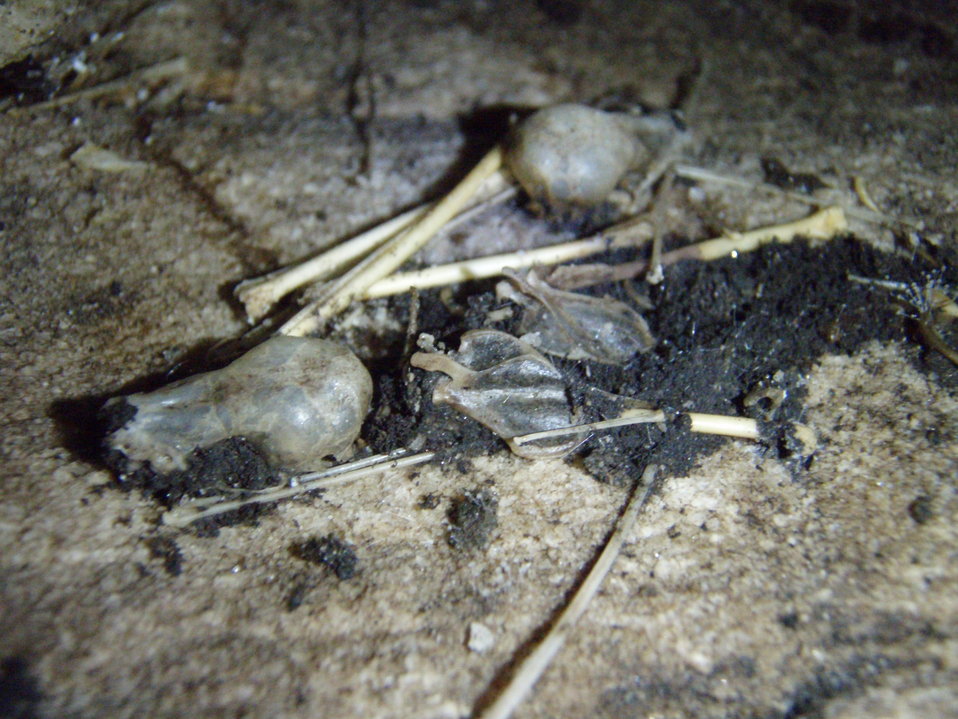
Bat skulls and bones litter the floor of Aeolus Cave, a WNS site in Vermont.